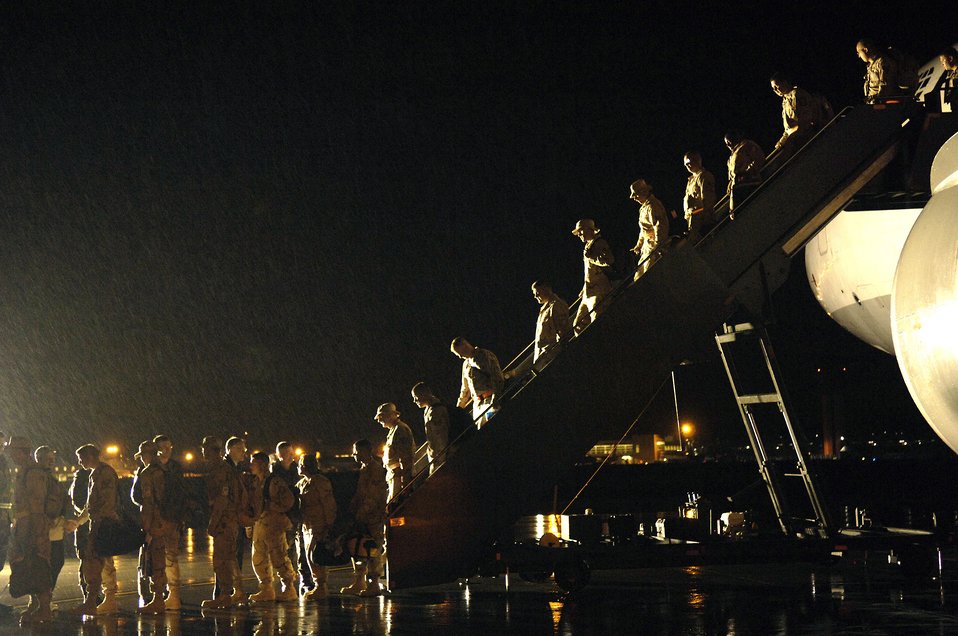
'Green Mountain Boys' come home